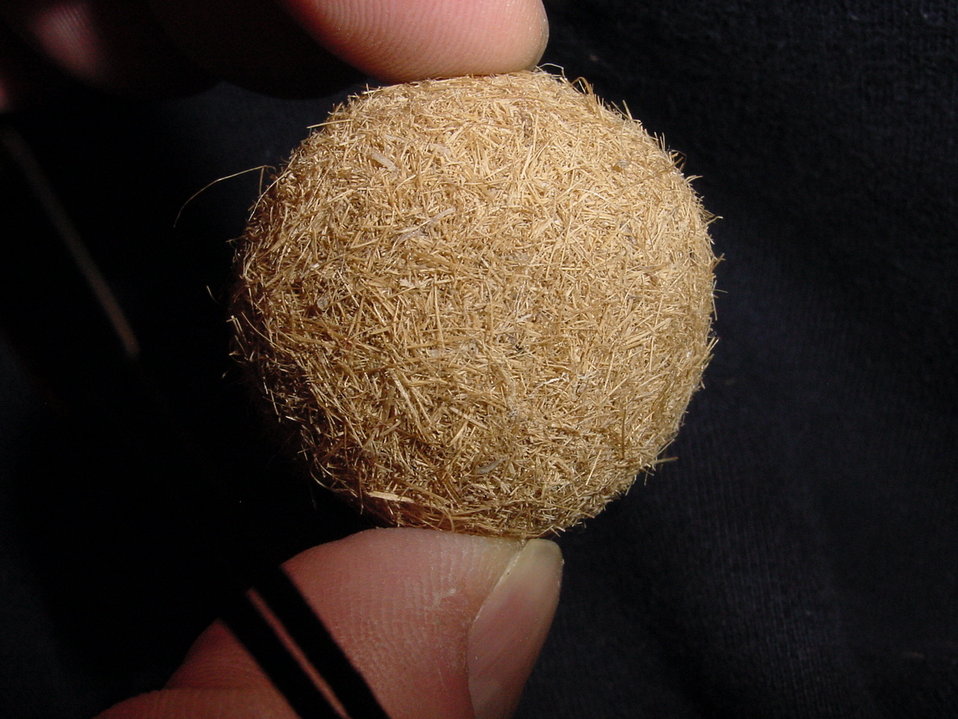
Deutsch: Strandobjekt von Korsika - Ein Seeball